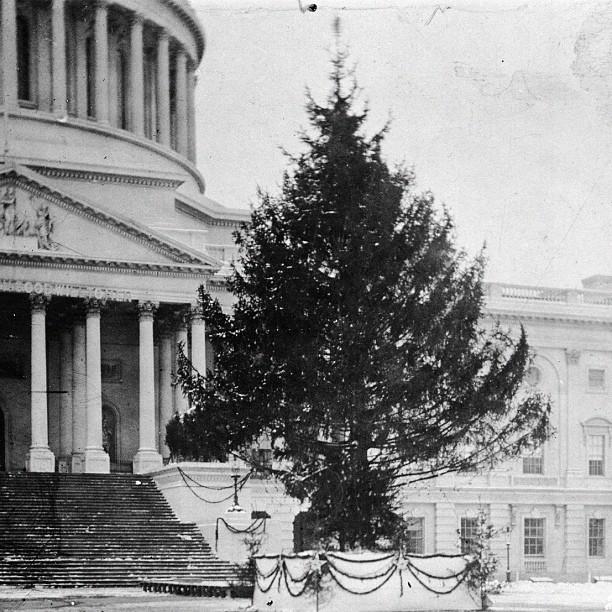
@capitoltree2012 arrives Capitol West Front Nov 26 10am (Pic: 1914 Tree on East Front).